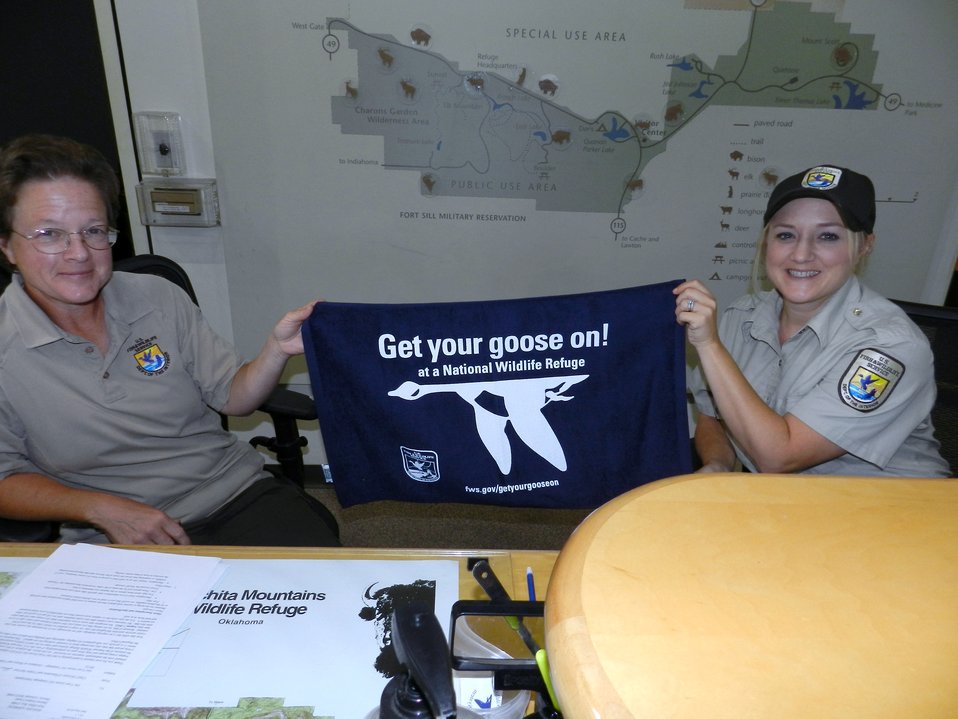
Get Your Goose On!

Wichita Mountains National Wildlife Refuge in Oklahoma.